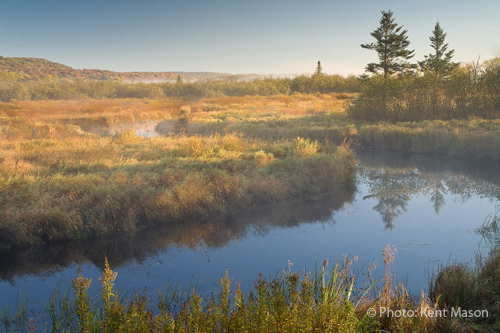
Early Morning Float

Sunrise over the Blackwater River